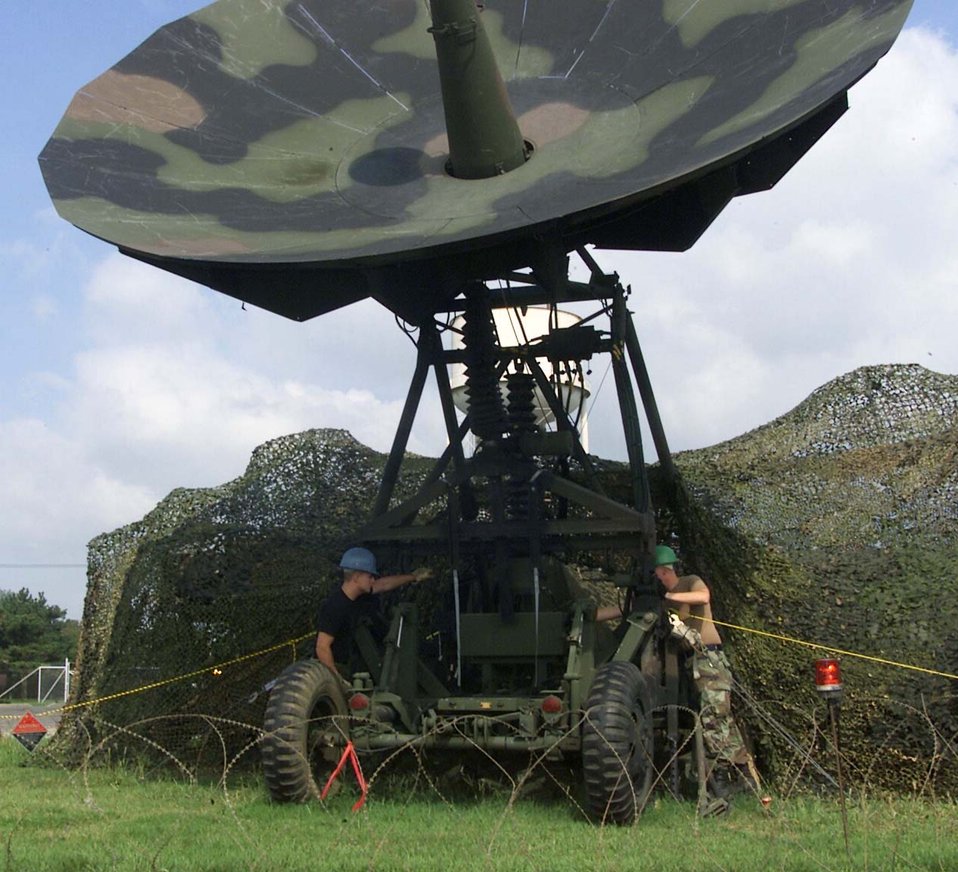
Maintaining satellites

GWANGJU AIR BASE, South Korea -- Senior Airmen Christopher Gremling and David McNally perform daily maintenance on a tactical satellite terminal here Sept. 8. Both Airmen are satellite communications technicians assigned to Camp Humphreys, South Korea.